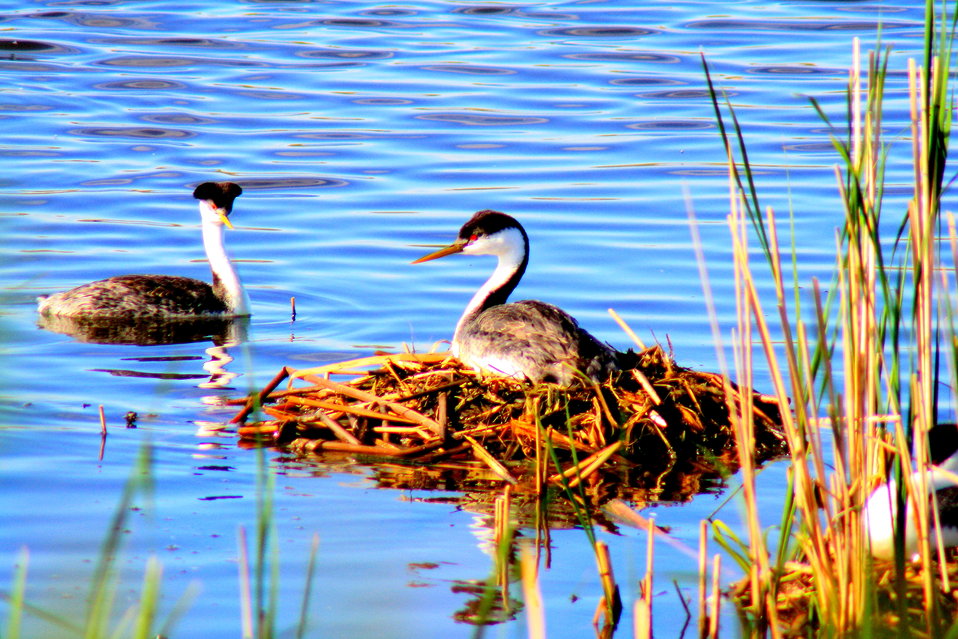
Nesting Western Grebes

A pair of nesting Western grebes in a colony of approximately 200.

Location: Haglund Waterfowl Production Area, Chase Lake Wetland Management District

Credit: Neil Shook / USFWS

Photo Contest Entry #177